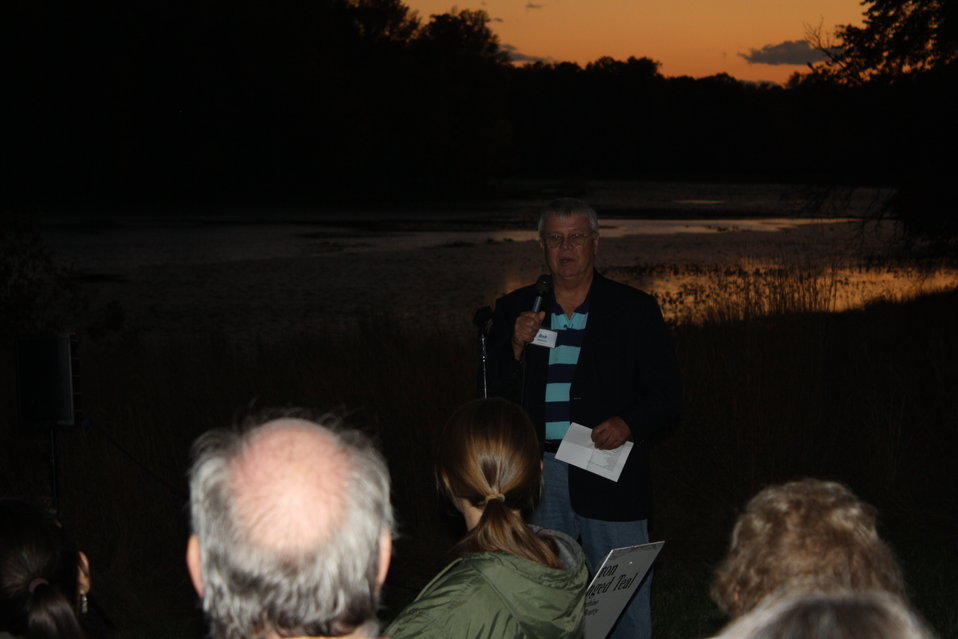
Patuxent Research Refuge 75th Anniversary

Symposium attendees told stories around a campfire.